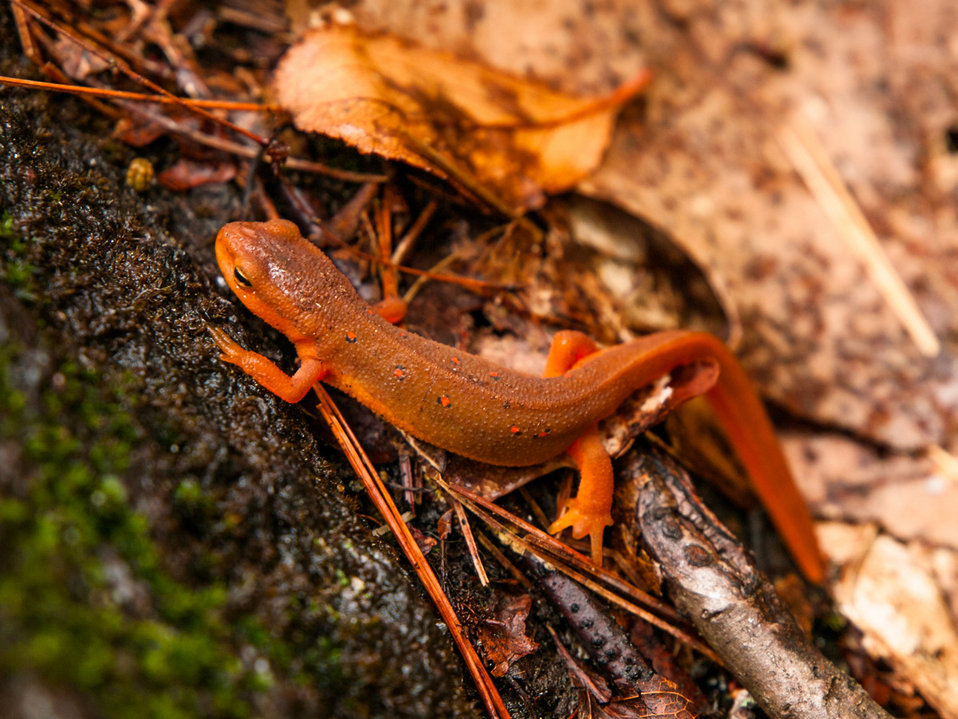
Red-spotted newt

Photographed at South River State Forest in Conway, MA.